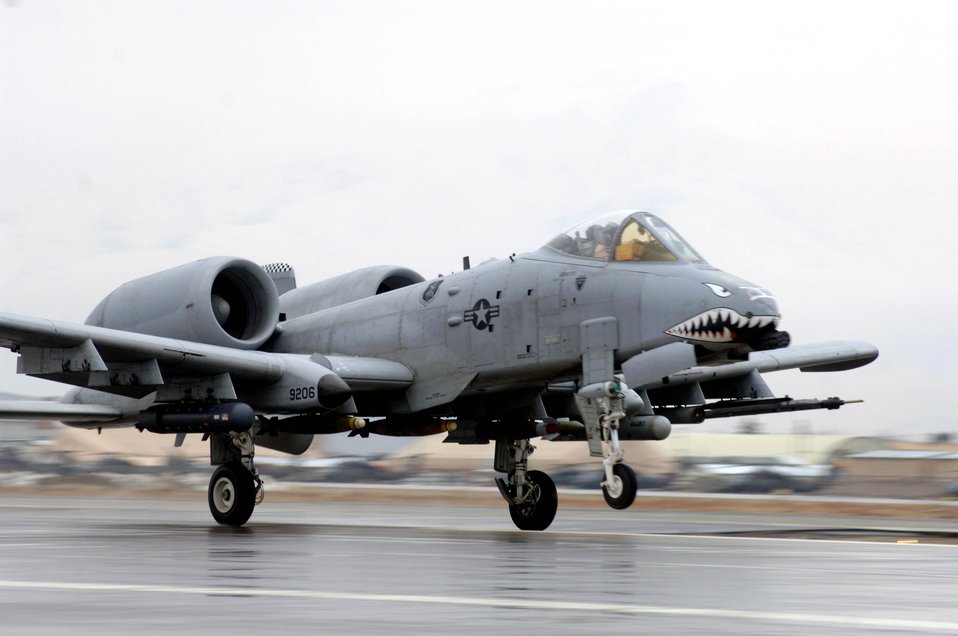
Bagram opens $68 million runway

An A-10 Thunderbolt II assigned to the 455th Air Expeditionary Wing lifts off the new runway opened Dec. 20 at Bagram Air Base, Afghanistan. The new runway is 2,000 feet longer than the previous runway and can support all of the aircraft in the U.S. inventory.